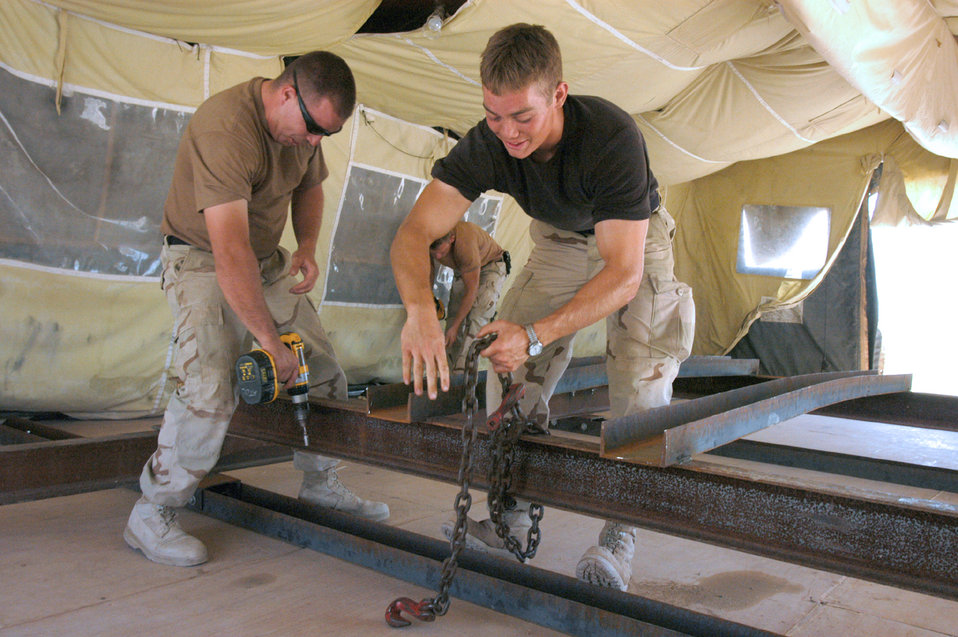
Moving tents eases with ingenuity

SOUTHWEST ASIA -- Senior Airman Josh Gulick (left) removes screws from a